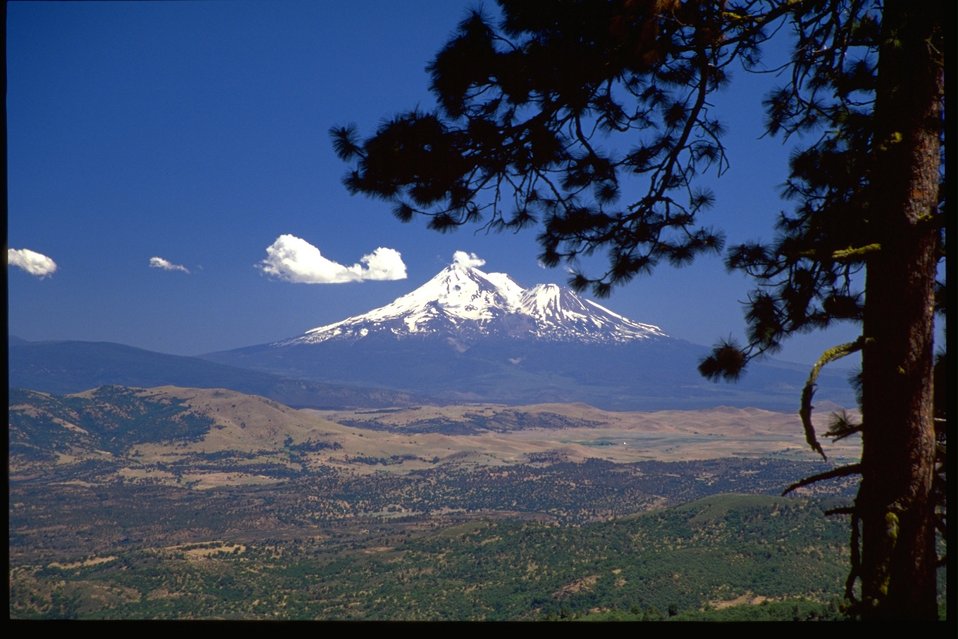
Scenic view of Mount Shasta.